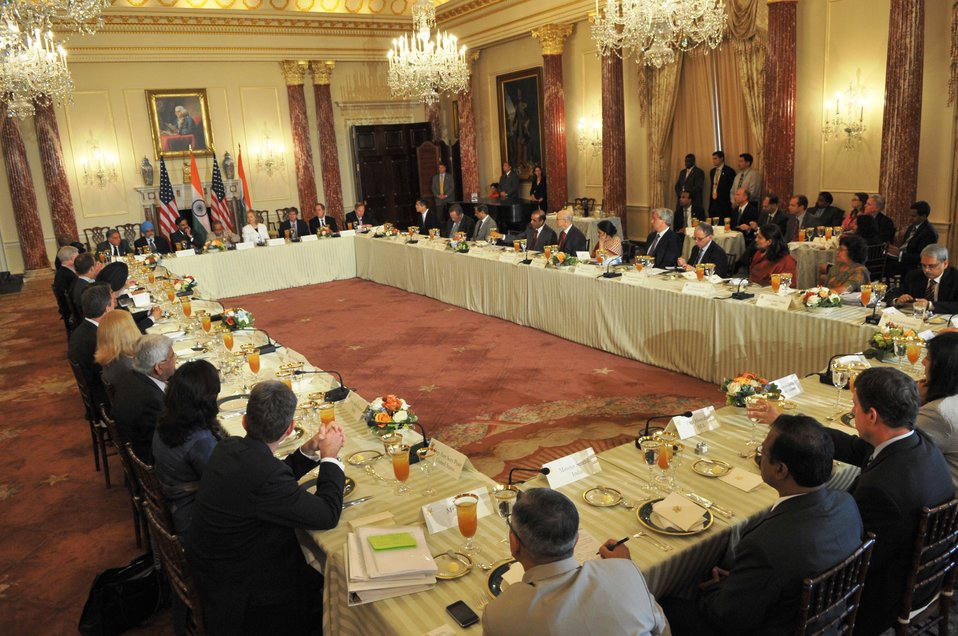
Secretary Clinton Attends U.S.-India CEO Forum

U.S. Secretary of State Hillary Rodham Clinton delivers attends a luncheon co-hosted by U.S. Deputy Secretary Jim Steinberg and U.S. Under Secretary for Economic, Energy and Agricultural Affairs Robert Hormats for the U.S.-India CEO Forum at the U.S. Department of State in Washington, D.C., on June 22, 2010.